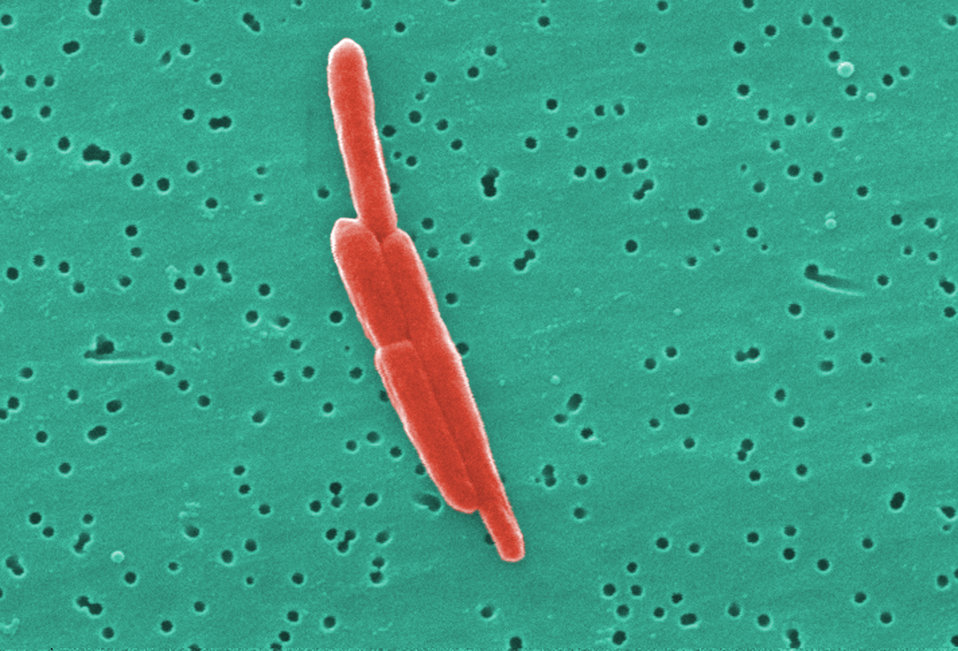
This digitally-colorized scanning electron micrograph (SEM) depicted a small grouping of Gram-negative Sebaldella termitidis bacteria.